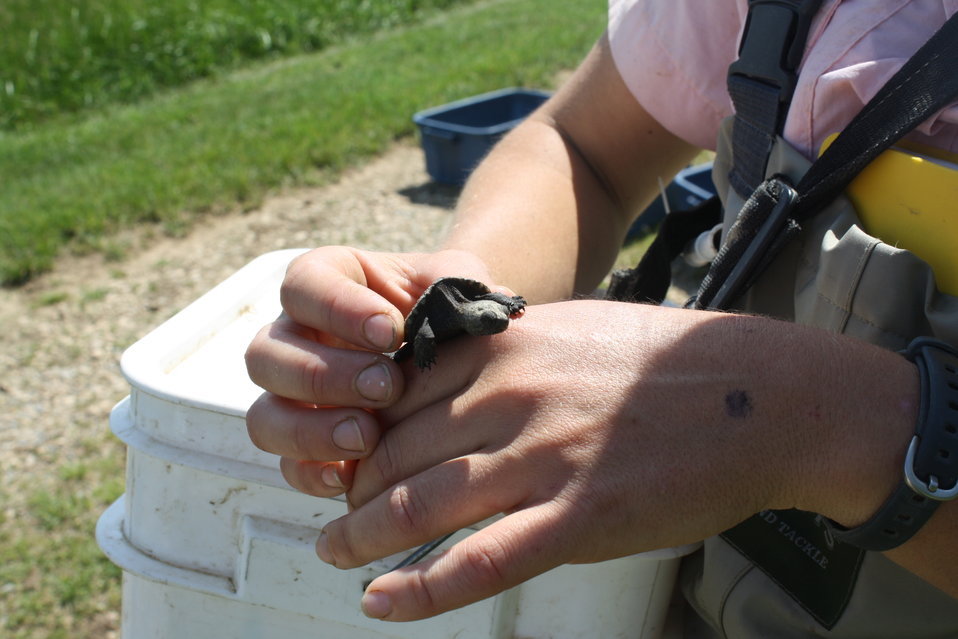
Year of the Turtle

A juvenile snapping turtle from the South River in Virginia.